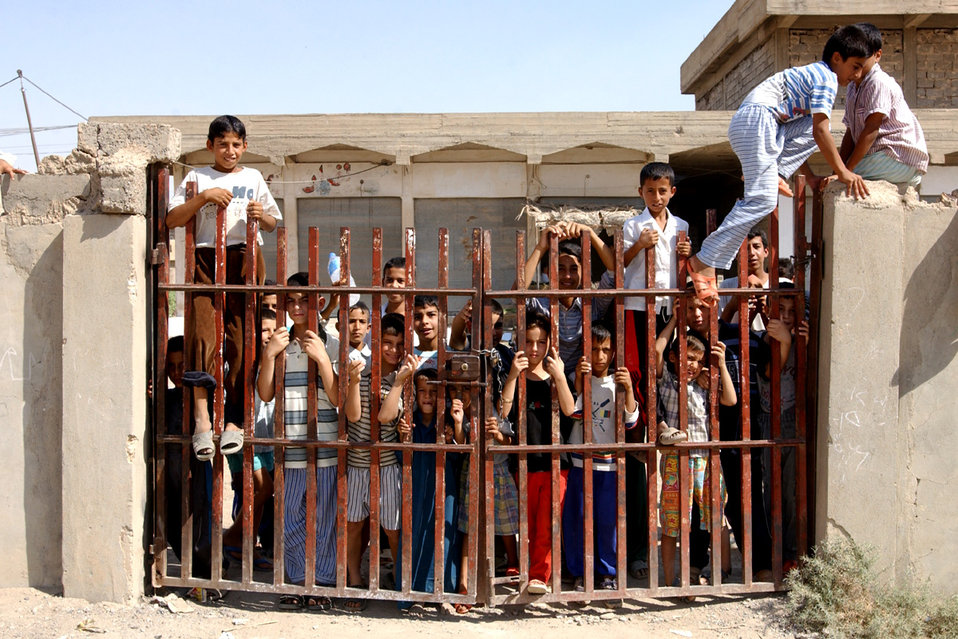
Iraqi students

KIRKUK, Iraq (AFPN) -- Iraqi students wait impatiently at the gates for the opening of their new school. Army and Air Force troops volunteered to renovate two local schools near Kirkuk Air Base, Iraq.